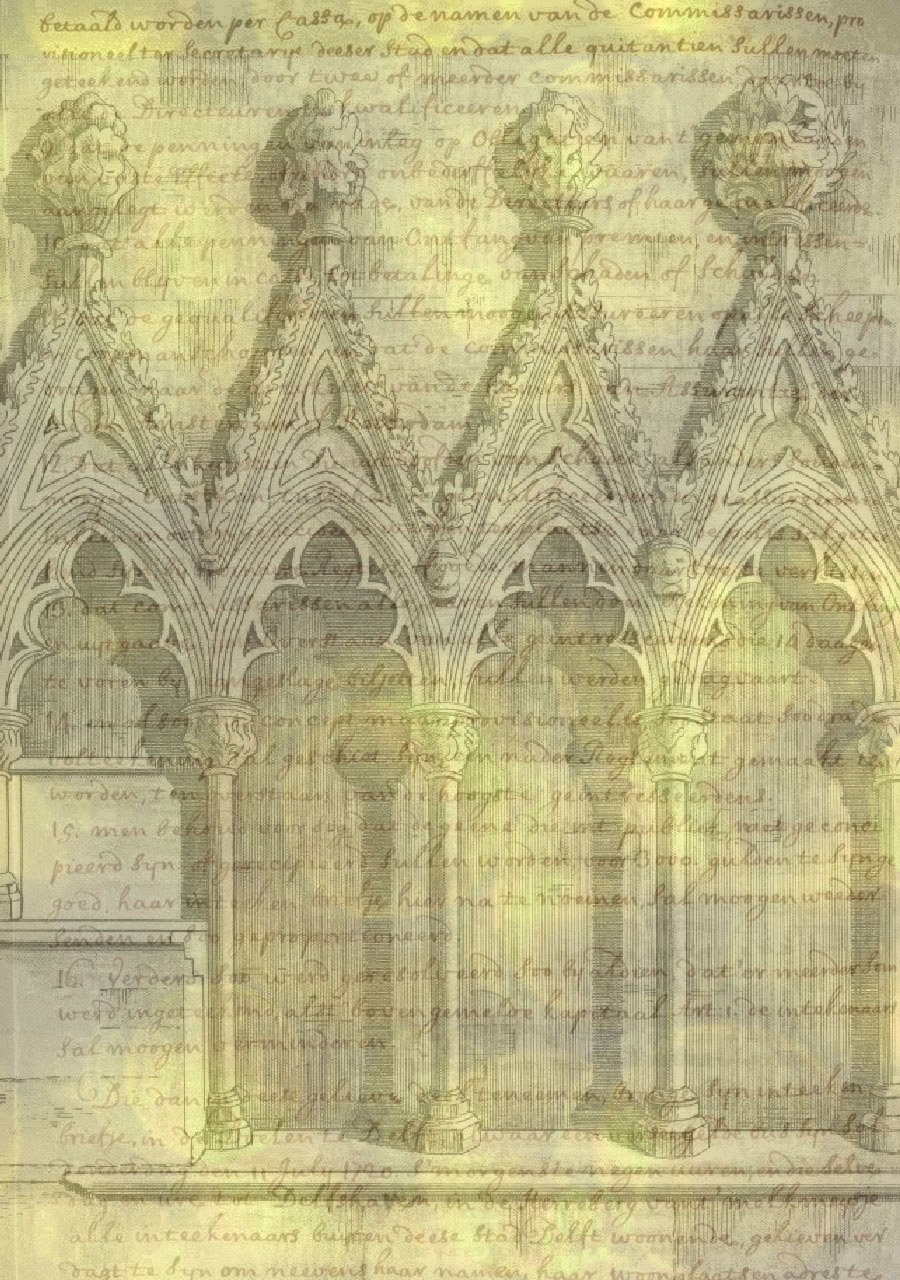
The arches

A vintage looking background with gothic arches. steampunk anyone?.